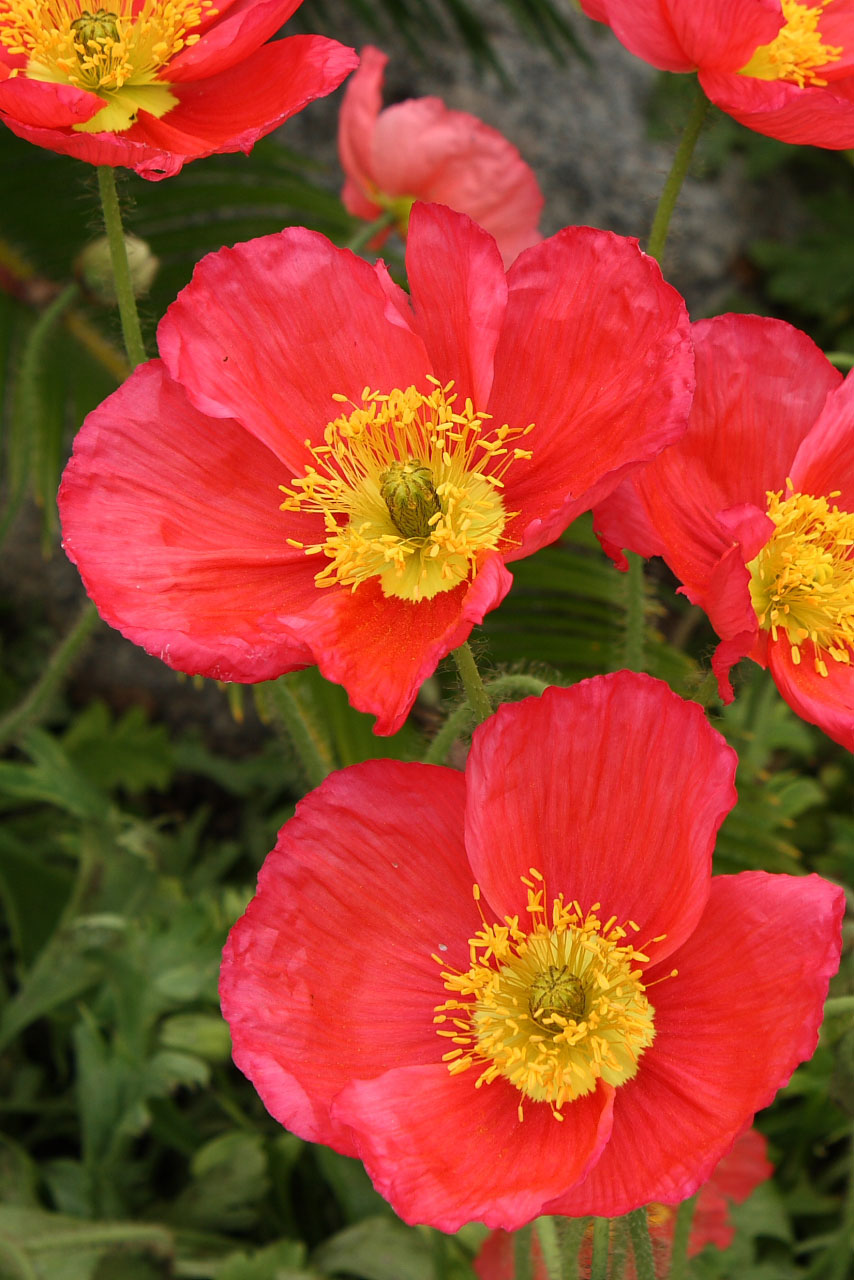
Red and yellow poppy blooms

Red poppy blossoms with yellow centers.